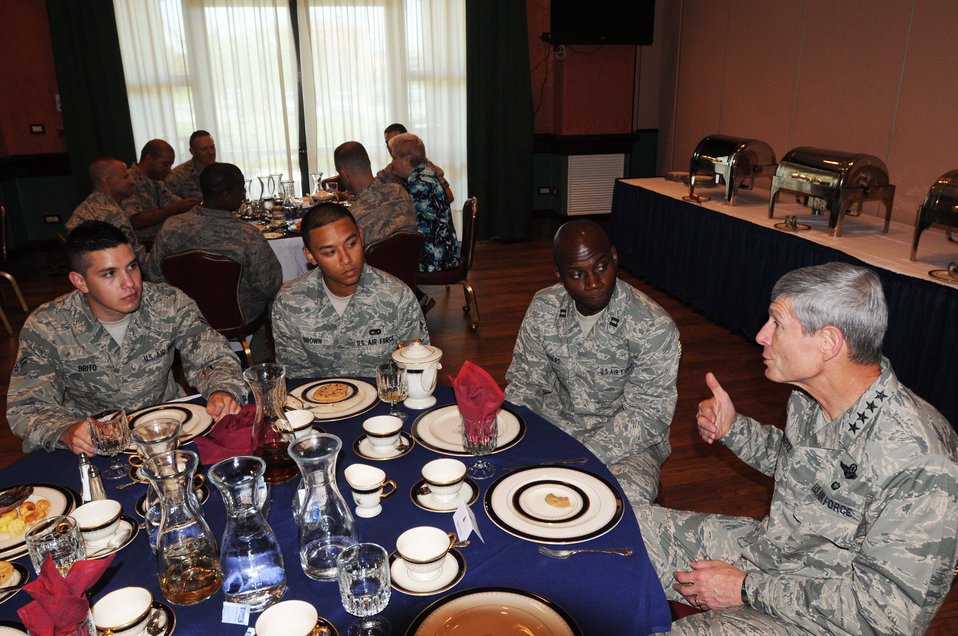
Chief of staff and spouse visit Aviano Air Base

Air Force Chief of Staff Gen. Norton Schwartz chats with Airmen July 12, 2011, at La Bella Vista Club at Aviano Air Base, Italy. The general and his wife Suzie were visiting Aviano to meet with Airmen and their families and observe the installation’s mission. Schwartz shared lunch with Aviano personnel during which he discussed issues affecting Airmen.